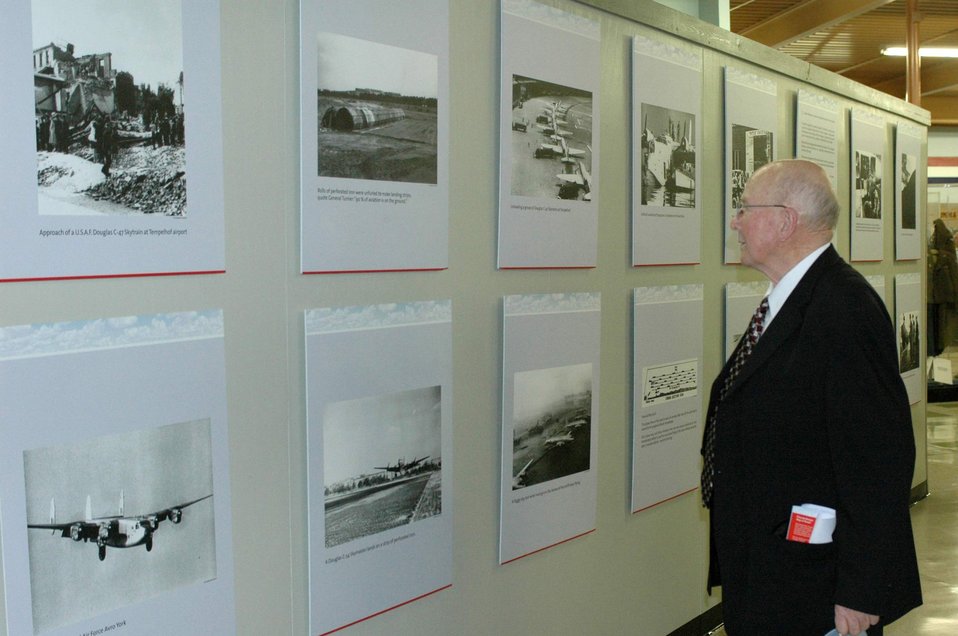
Berlin Airlift vets recognized by German government

Retired Lt. Col. Clinton Hankins walks through the 60th anniversary exhibit on display Oct. 15 at Travis Air Force Base, Calif. Colonel Hankins along with 23 fellow Berlin Airlift veterans were presented the German-American Friendship Award for their contributions to German-American relations. He is a a Berlin Airlift veteran.